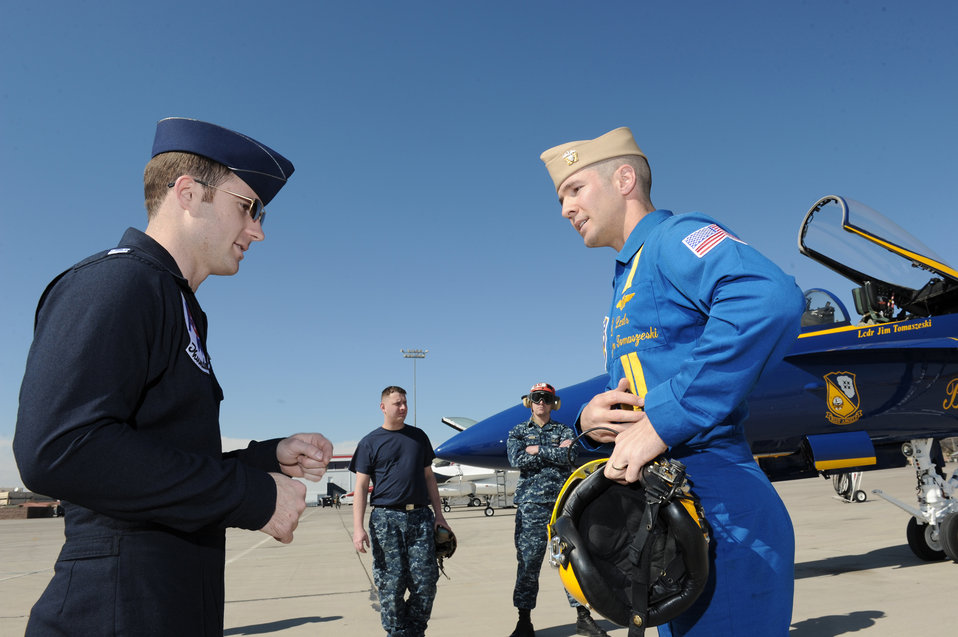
Thunderbirds fly the Blue Angels

Capt. Ryan Riley (left) greets Lt. Cmdr. Jim Tomaszeski Feb. 23, 2011, at Nellis Air Force Base, Nev. Captain Riley is the Thunderbirds left wing. Commander Tomaszeski is the Navy Blue Angels right wing.